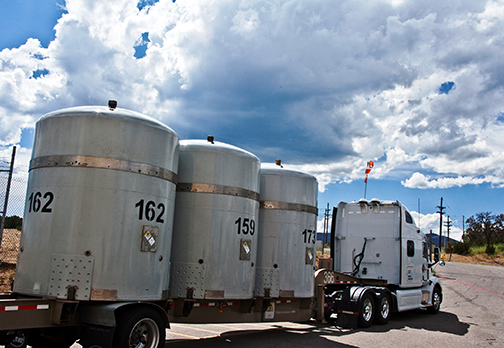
Los Alamos National Laboratory TRU waste programs has shipped a record number of transuranic (TRU) waste shipments to the Waste Isolation Pilot Plant near Carlsbad, NM for permanent disposal.